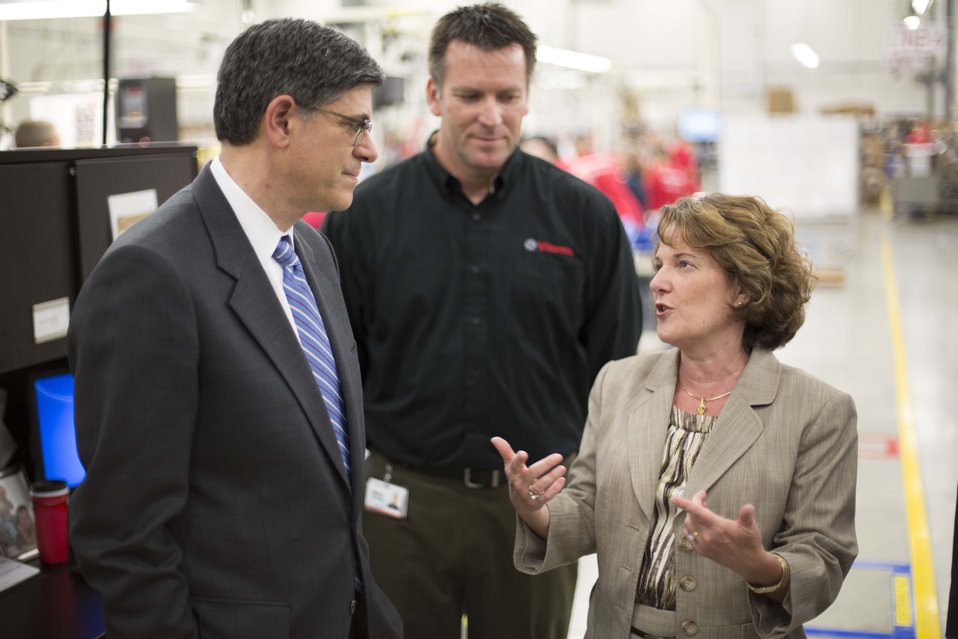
Secretary Lew tours Vitamix manufacturing facility during trip to Cleveland, Ohio

May 7, 2013 — Vitamix President and CEO Jodi Berg talks with Secretary Lew while Brad Johnson, Vitamix Manufacturing Operations Manager, looks on.